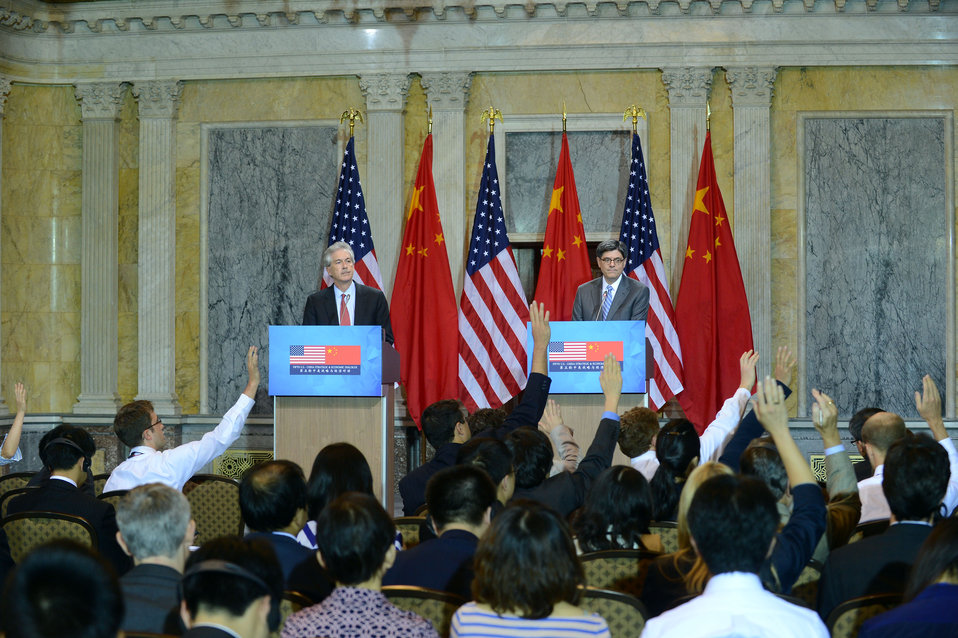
Deputy Secretary Burns and Secretary Lew Address Reporters

U.S. Deputy Secretary of State William Burns and U.S. Secretary of the Treasury Jacob Lew address reporters at the U.S.-China Strategic and Economic Dialogue in the Cash Room at the U.S. Department of Treasury in Washington, D.C., on July 11, 2013.